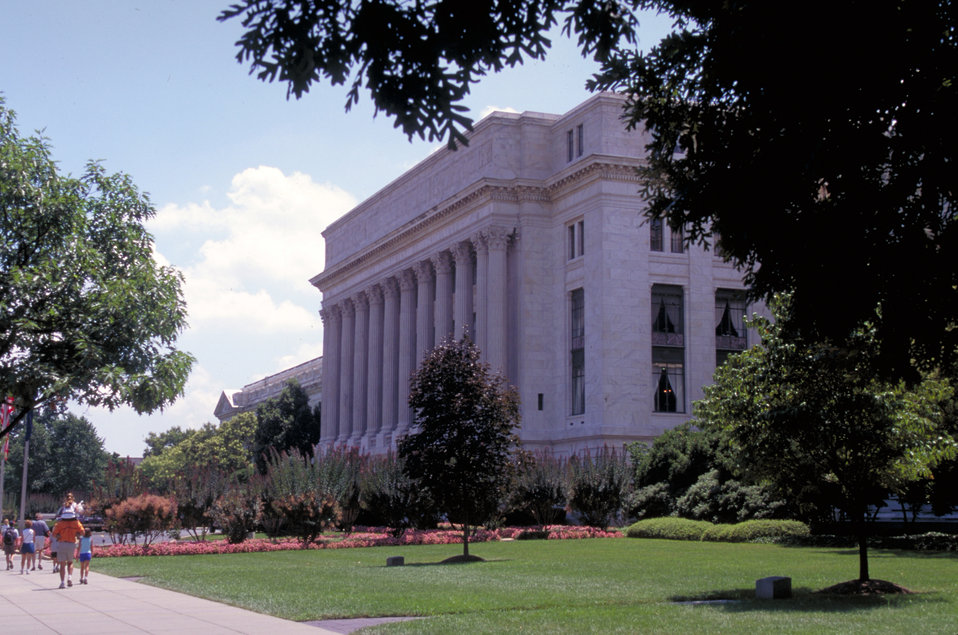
The Jamie L. Whitten, Federal Building, U.S. Department of Agriculture in Washington, D.C.